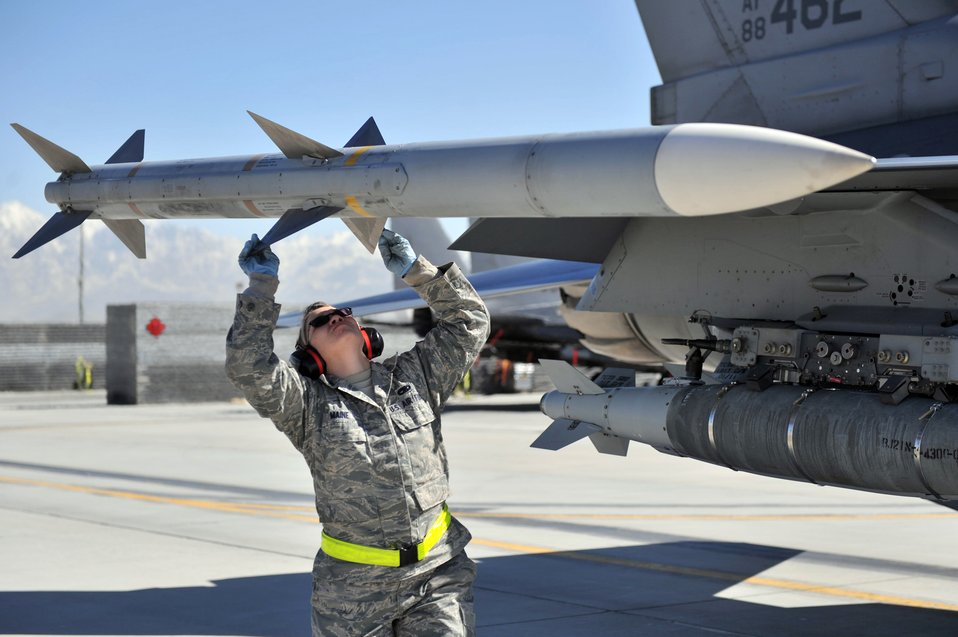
Locked and loaded

Senior Airman Hilarie Maine ensures a missile is secured on the wing tip of an F-16 Fighting Falcon during a pre-flight check March 9, 2011, at Bagram Airfield, Afghanistan. Airman Maine is assigned to the 455th Expeditionary Aircraft Maintenance Squadron.